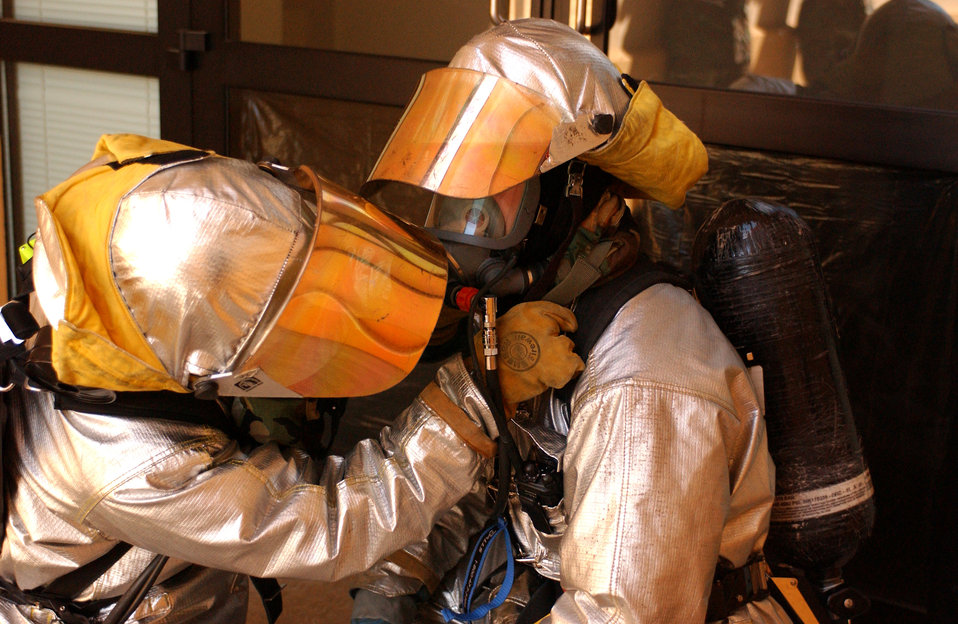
Exercise response

Firefighters help one another gear up before entering a building during a local Salty Nation exercise at Aviano Air Base, Italy, on Tuesday, June 6, 2006. The firefighters are with the 31st Fighter Wing here. The exercise runs through June 9.